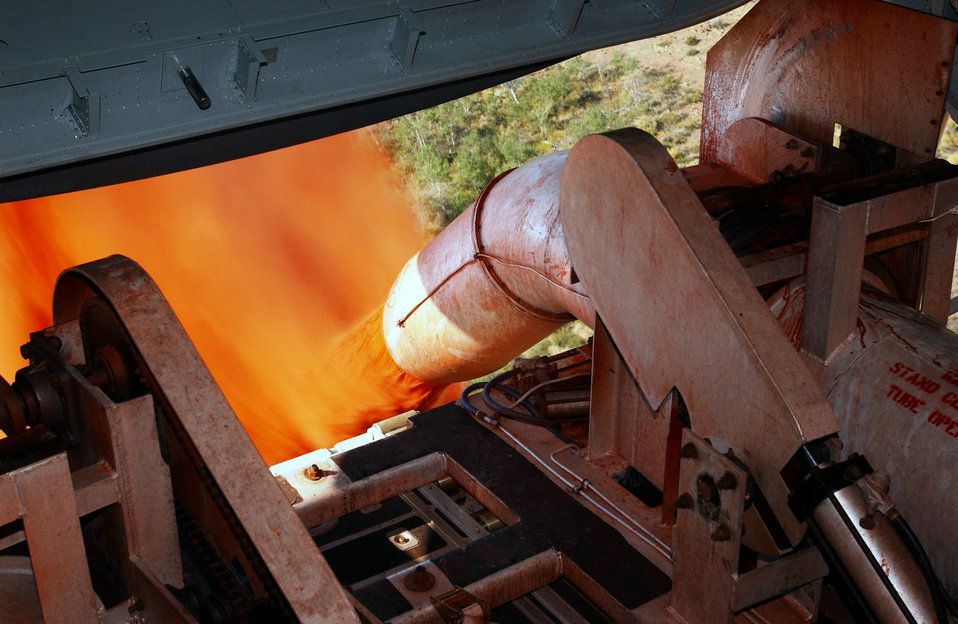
Air Force Reserve unit activated to fight California fires

A Peterson Air Force Base, Colo., C-130 Hercules dispenses fire retardant liquid during a Modular Airborne Firefighting System mission in Klamath Falls, Ore., in August 2006. A MAFFS unit can discharge its load, 3,000 gallons weighing 28,000 pounds, in a little over five seconds.